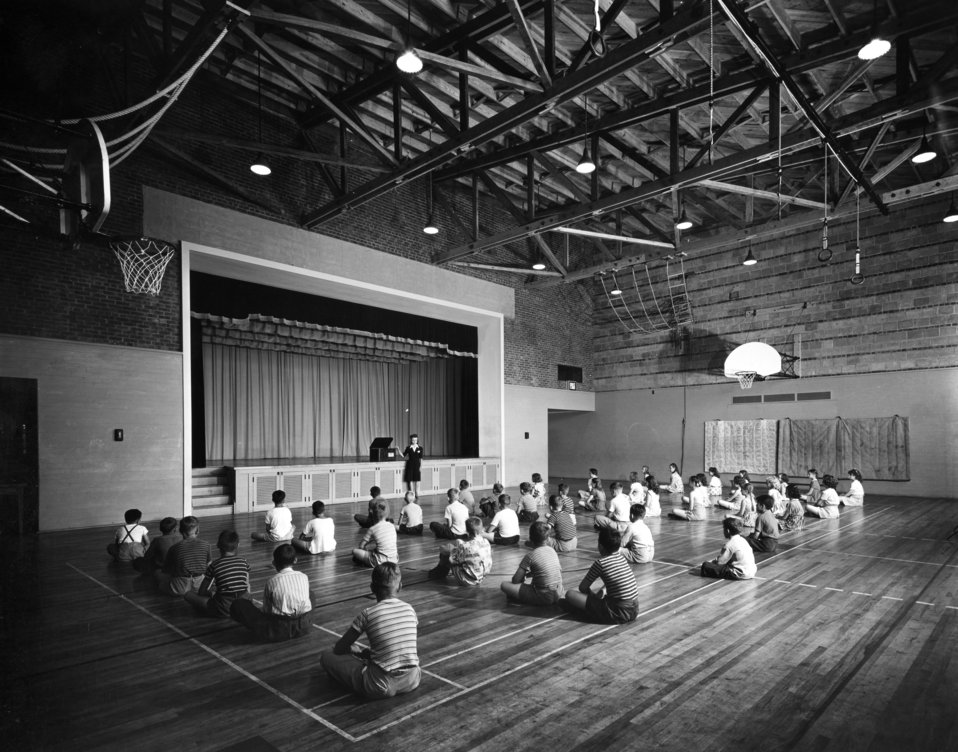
Interior View of Oak Ridge School GYM Class 1944

MED149 DOE photo Ed Westcott 1944 Oak Ridge Tennessee